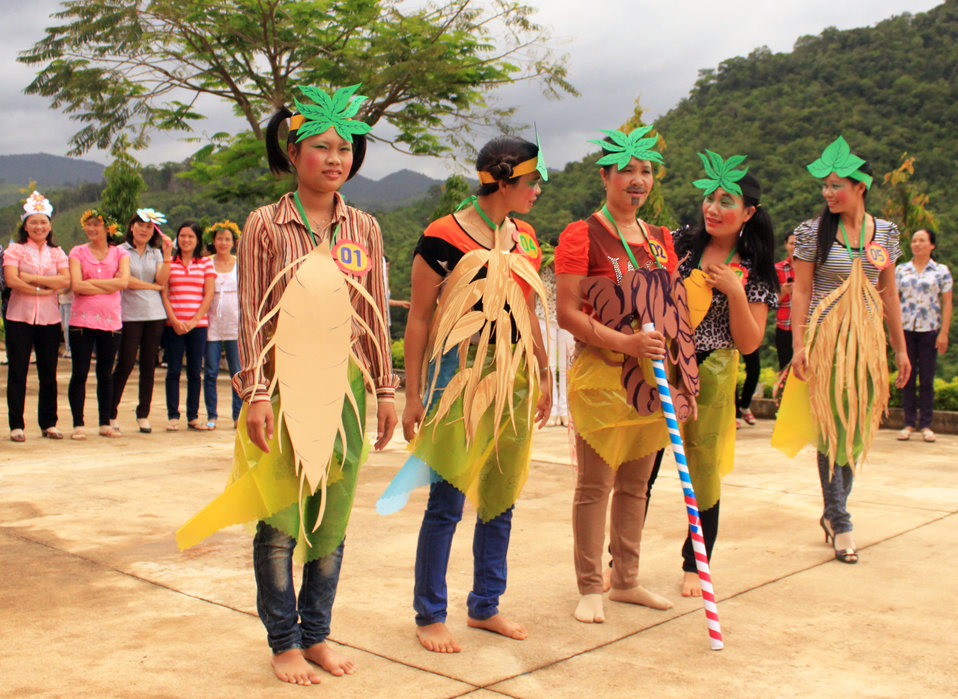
Teachers in Kon Tum practice what they learned from USAID-funded intensive training courses